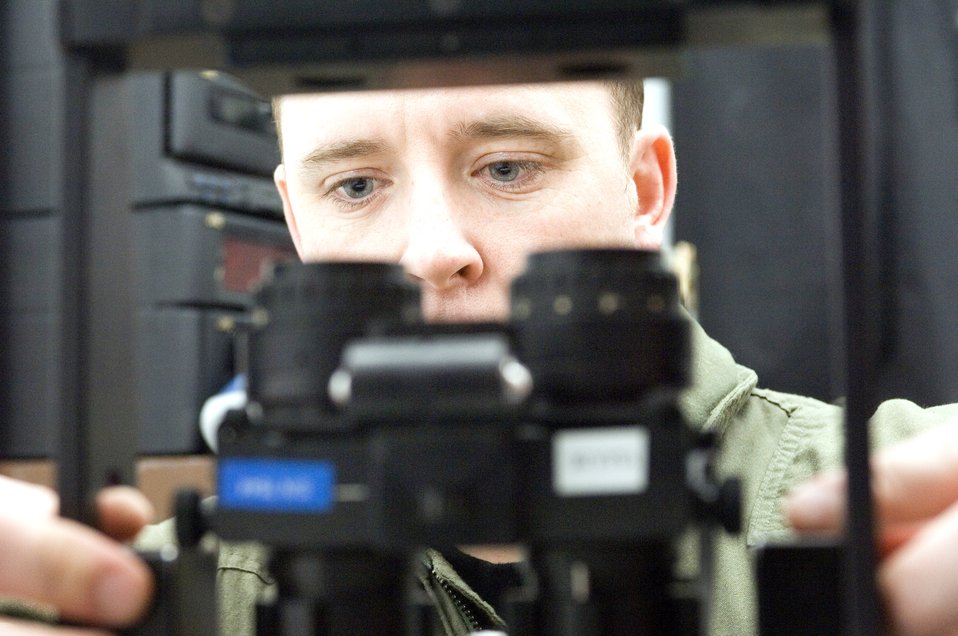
One stop support

Staff Sgt. Bobby Pickel tests a pair of night vision goggles at Spangdahlem Air Base, Germany, Thursday, March 23, 2006. Sergeant Pickel, of Woodbridge, Va., is a life support technician on temporary duty with Detachment 5, 817th Expeditionary Airlift Squadron at Spangdahlem. He is with the 305th Operational Support Squadron at McGuire Air Force Base, N.J.